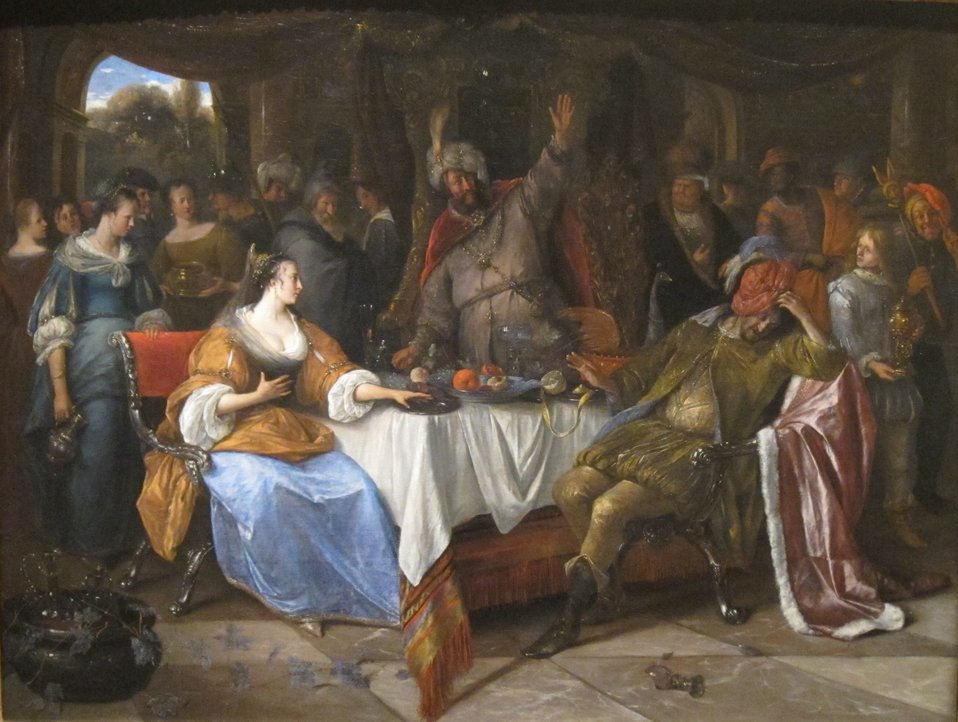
'Esther, Ahasuerus, and Haman', oil on canvas painting by Jan Steen, c. 1668